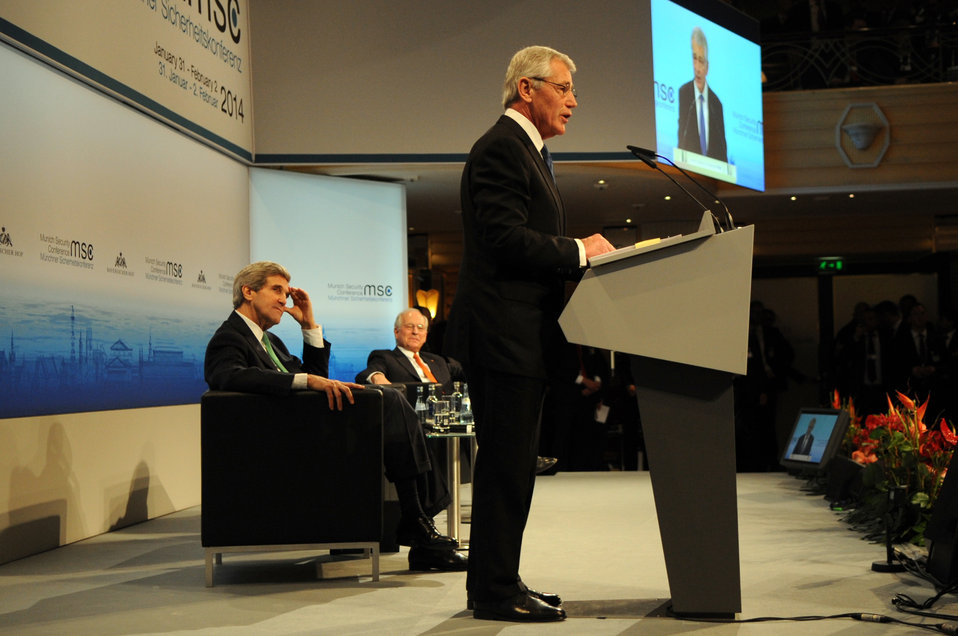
Secretary Kerry Listens as Secretary Hagel Addresses Munich Security Conference

U.S. Secretary of State John Kerry listens to a speech by U.S. Secretary of Defense Chuck Hagel at the Munich Security Conference in Munich, Germany, on February 1, 2014.